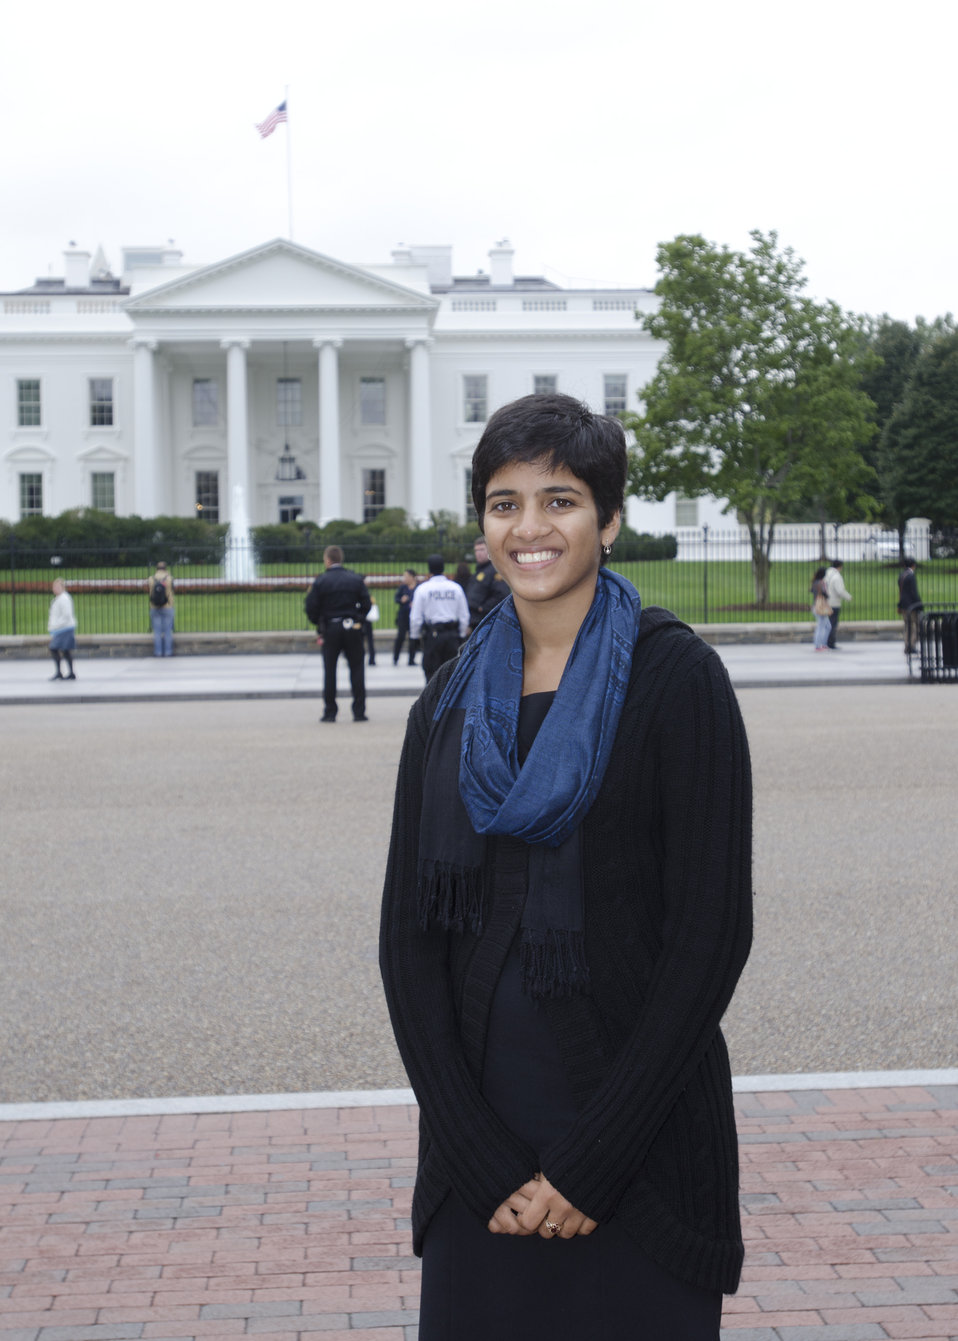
Champion of Change recipient Neeta Patel in front of the White House in Washington, D.C. on Tuesday, Oct. 9, 2012. Patel is a first-year student at Princeton University and throughout high school in Camden, NJ she was very involved in the Camden County 4-H Program. Patel served as an AmeriCorps member in the Camden County 4-H Program in 2010 and 2011. After graduating from high school in 2011, she was inspired to spend year in Ghana, West Africa as part of Princeton University’s Bridge Year Program. While there, she taught math and computer to the 65 youth in a rural village. By the end of her gap year, she had raised funds of over $2000 to build a computer lab with several computers for student use.